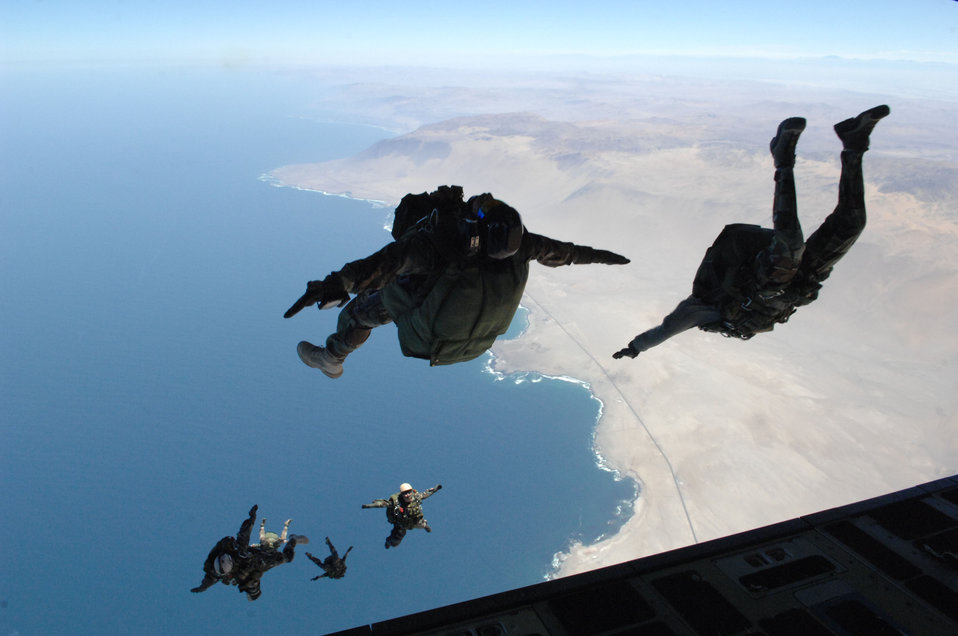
Operation Southern Partner

A Search and Rescue team from the 48th Rescue Squadron, Davis Monthan Air Force Base, Ariz., part a team known as the Guardian Angel Weapons System or GAWS, jump along side of Chilean airman from the back of a C-17 Globemaster III over Iquique Air Base, Chile during Operation Southern Partner, Oct., 30. The aircraft is assigned to the 535th Airlift Squadron, Hickam AFB, Hawaii. OSP is an in-depth, two-week subject matter exchange emphasizing partnership, cooperation and sharing of information with partner nation Air Forces in Latin America.